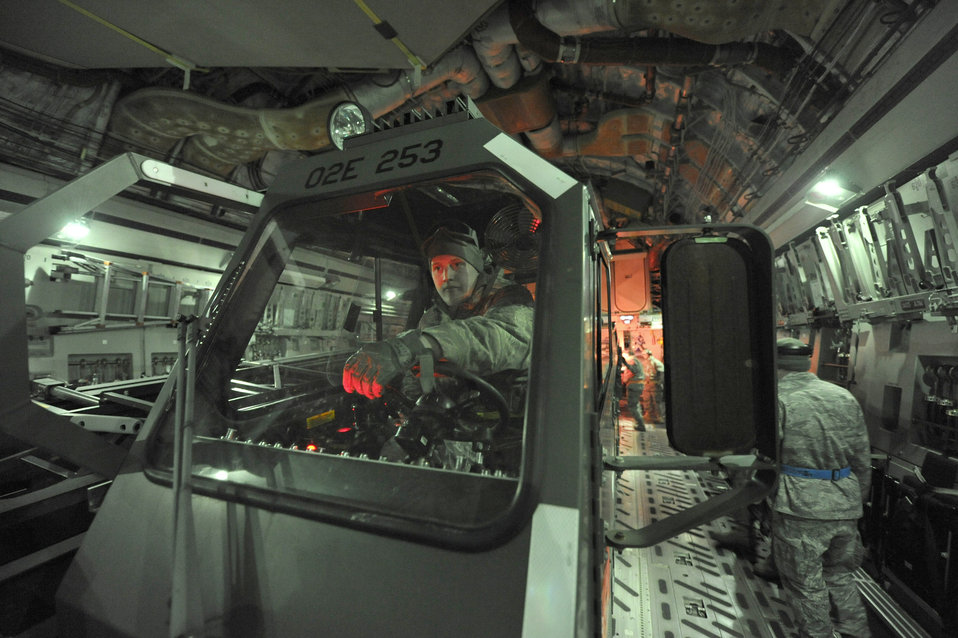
Field training exercise

Staff Sgt. Casanova Geary waits for clearance to drive a next-generation small loader off of a C-17 Globemaster III during a nighttime engine-running offload Feb. 23, 2011, at Joint Base McGuire-Dix-Lakehurst, N.J. Sergeant Geary is a member of the 621st Contingency Response Wing.